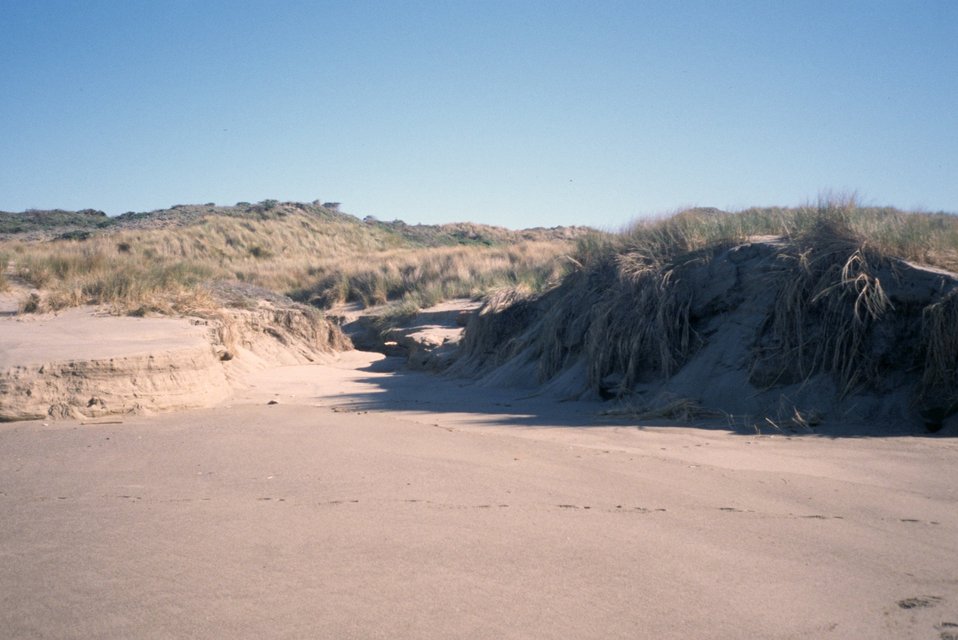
Point Reyes Great Beach